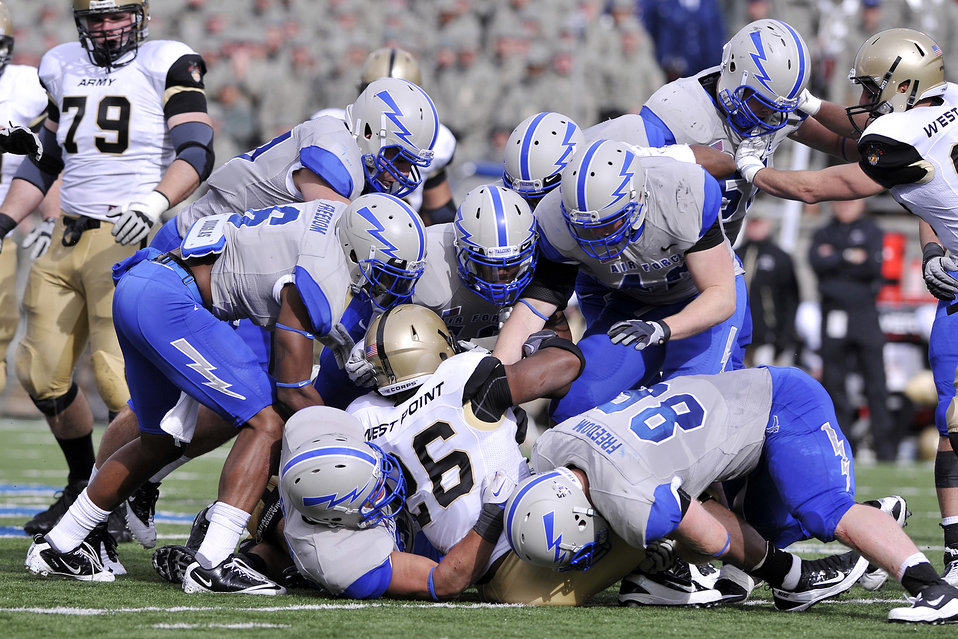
King of the Knights

Air Force Falcon defenders swarm Black Knights running back Larry Dixon in the Air Force-Army game at Falcon Stadium in Colorado Springs, Colo., Nov. 5, 2011. The Falcons capitalized on five Army turnovers to defeat the Black Knights, 24-14.